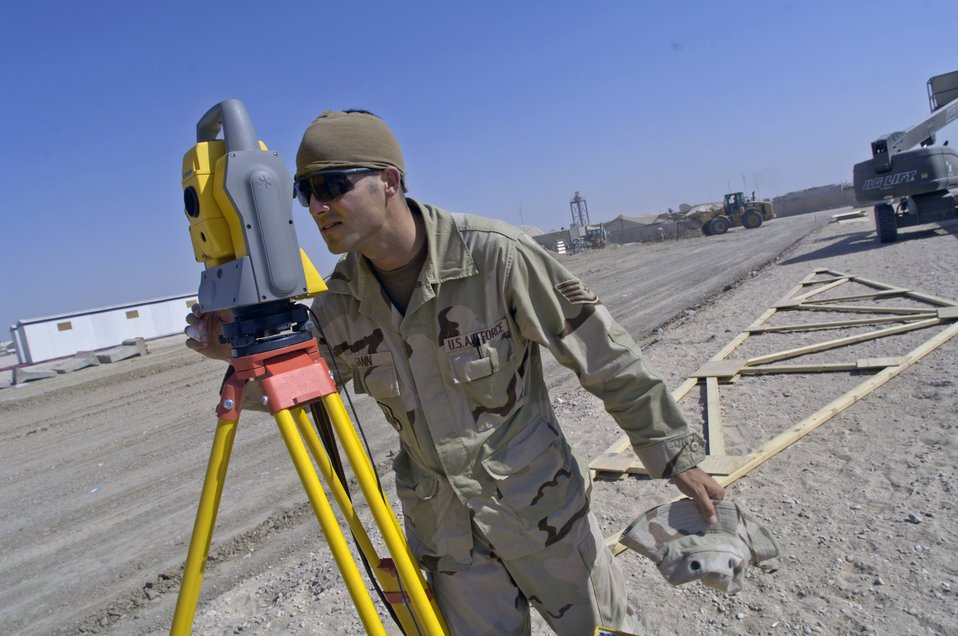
RED HORSE Airmen support Army in southern Baghdad

Staff Sgt. Sean Gann reads data from a total station used to position offset corner markers for the placement of a tactical operations center June 22 at Forward Operating Base Kalsu, Iraq. Sergeant Gann is an engineer assistant with the 557th Expeditionary RED HORSE Squadron deployed from the 820th RED HORSE Squadron at Nellis Air Force, Nev. He is originally from Bartow, Fla. Sergeant Gann and his fellow Rapid Engineer Deployable Heavy Operational Repair Squadron Engineers, or RED HORSE, Airmen are forward deployed from Balad Air Base, Iraq, to build four tactical operations centers for the Army's 2nd Brigade combat team, 3rd Infantry Division headquartered here. The 2/3 ID is currently running operations out of tents. The Air Force RED HORSE unit, made up of Air Guard, Reserve and active-duty Airmen, was requested by the Army to come into this